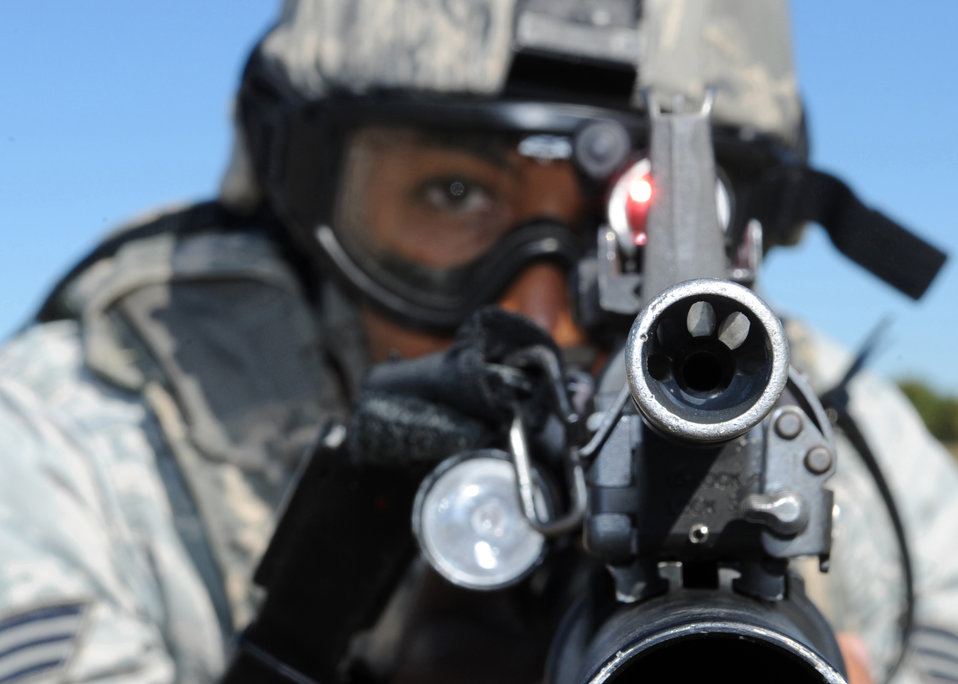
Feeling lucky?

Senior Airman Lazarus Wallace prepares to fire at the target during a training exercise for the Global Strike Challenge competition Nov. 4, 2010, at Barksdale Air Force Base, La. He is assigned to the 2nd Security Forces Squadron.